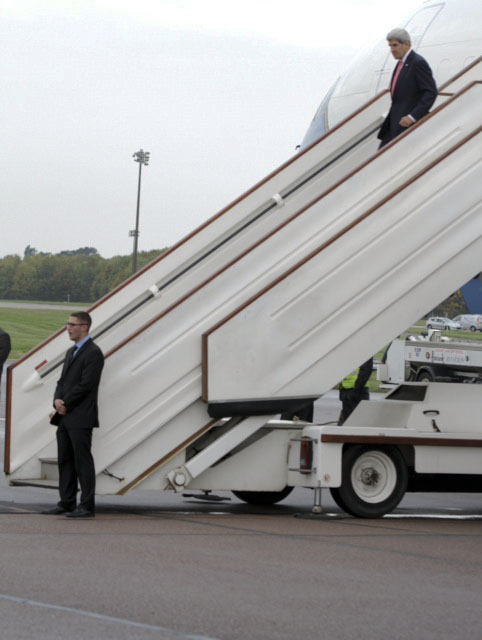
Secretary Kerry Arrives in London

U.S. Secretary of State John Kerry lands in London, United Kingdom on October 22, 2013.